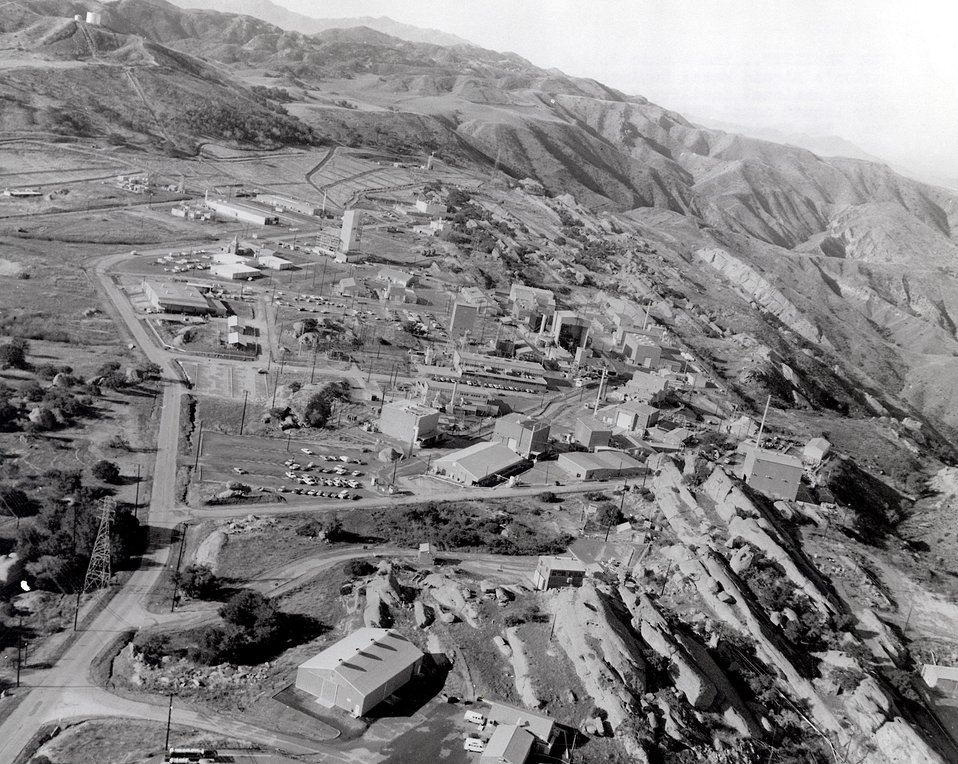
The Atomic Energy Commission's Liquid Metal Engineering Center is a major national facility for the high priority liquid metal fast breeder reactor program. Circa 1973.